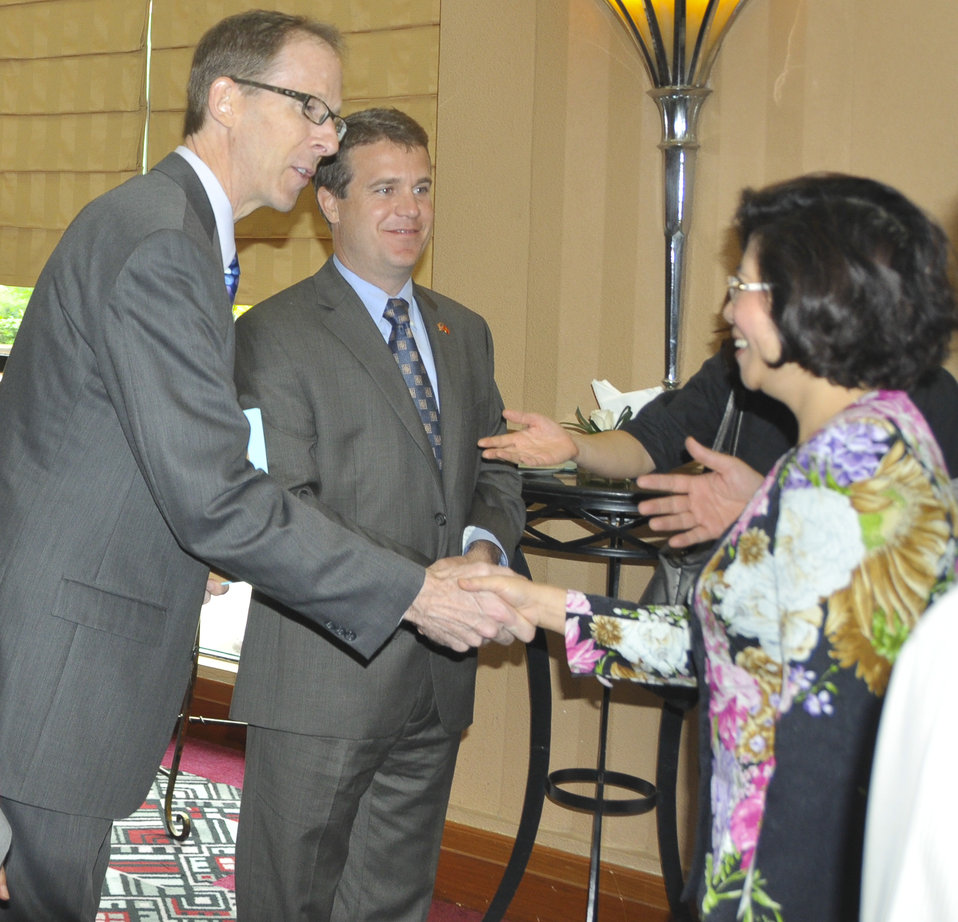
USAID Vietnam Mission Director Joakim Parker (left), Acting Senior Deputy Assistant Administrator Jason Foley of USAID (center) and Ms. Phan Thi My Linh, Vice Minister of Vietnam’s Ministry of Construction (right)

Hanoi, May 6, 2014.